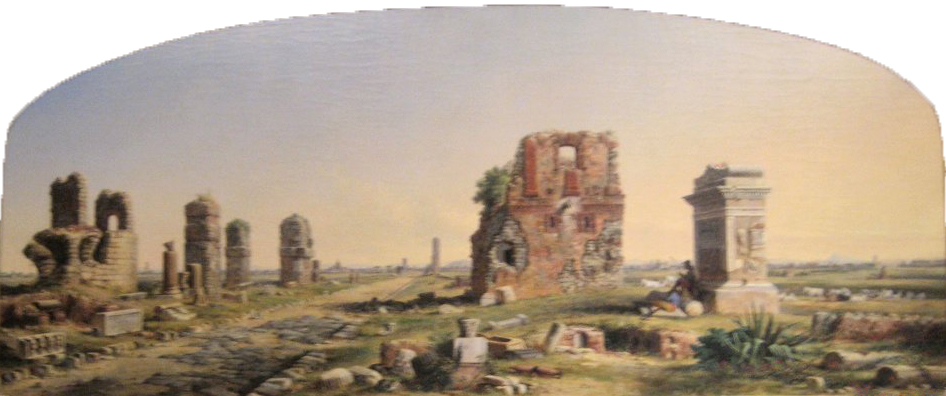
'Via Appia', oil on canvas painting by John Linton Chapman, 1873, Denver Art Museum